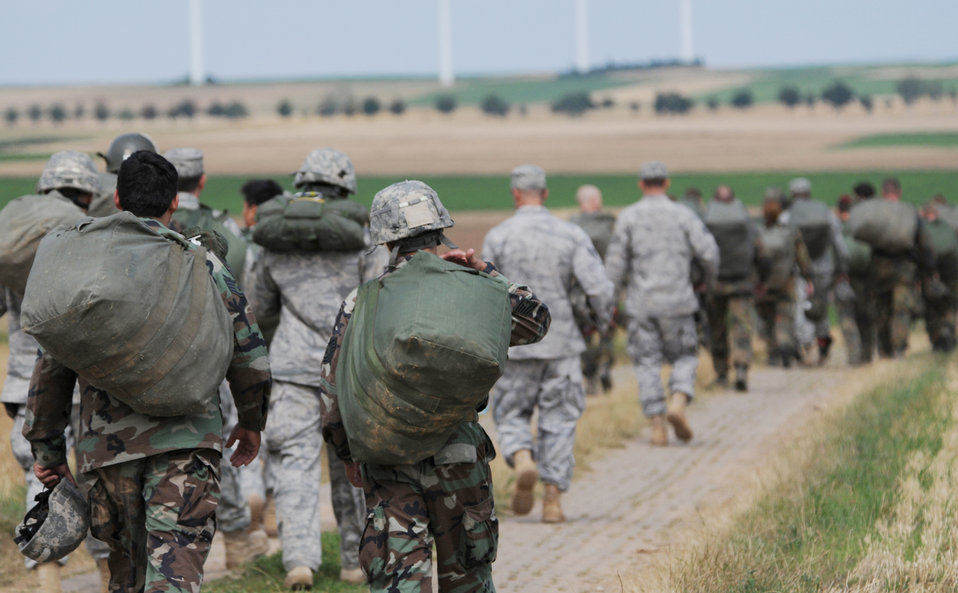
5 NATO countries take part in jump week

U.S. forces along with German, Italian, Belgium and Dutch armies march back after landing at the Bunker drop zone Aug. 13 in southwestern Germany. U.S. Soldiers and Airmen performed a combined airborne jump with four other NATO countries during International Jump Week.